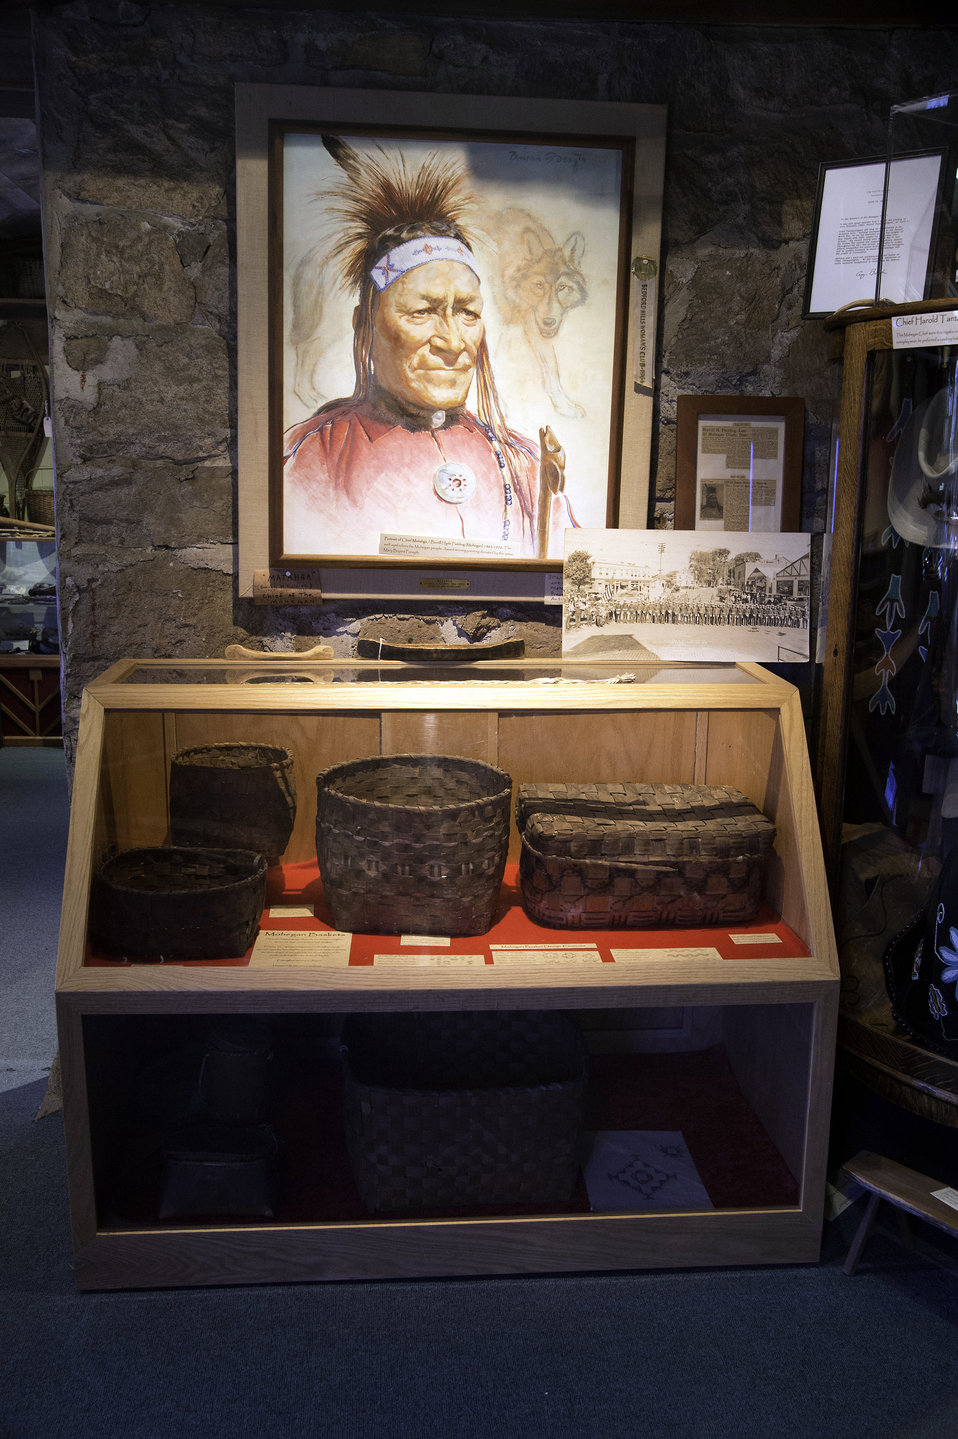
The Mohegan Tribe’s museum is the oldest Indian owned and operated museum in America. Gladys Tantaquidgeon along with her brother, Harold and father John, built the museum in 1931 in Uncasville, CT as a place to keep Mohegan treasures.